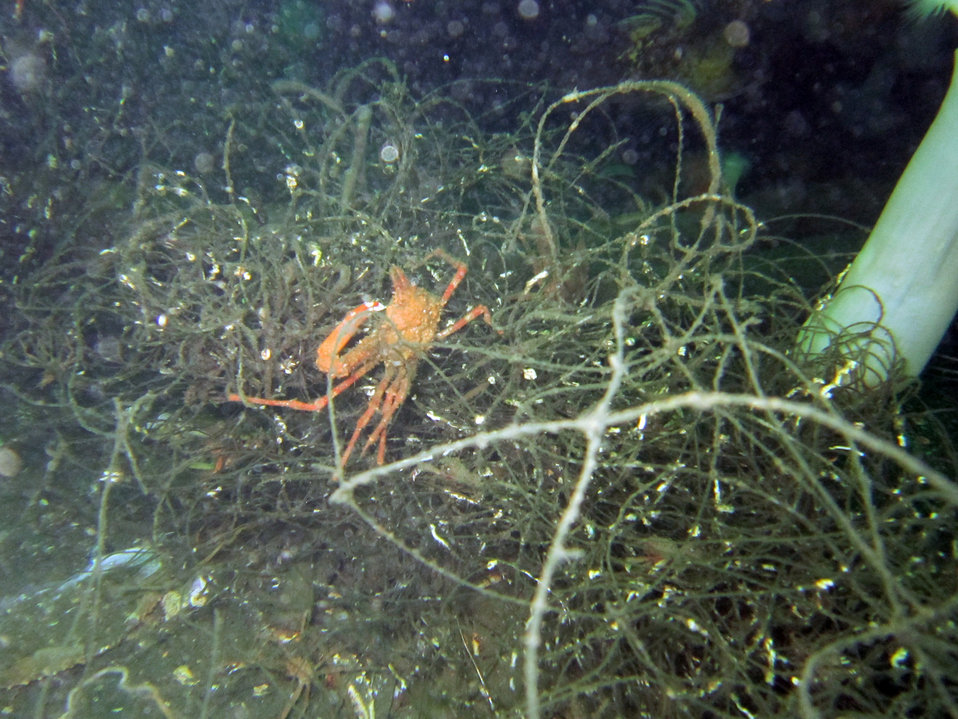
March 27, 2013 - Small crab stuck in ‘ghost nets’ on Puget Sound seafloor

EPA divers have been mapping out abandoned and derelict fishing gear, to assist the mission of the NW Straits Commission to clean up Puget Sound.

Abandoned nets and crab pots harm creatures both large and small and remains to be a serious problem under the surface.

Our divers were in the water in March to continue helping with this critical Puget Sound Initiative.
Find out more about this joint project